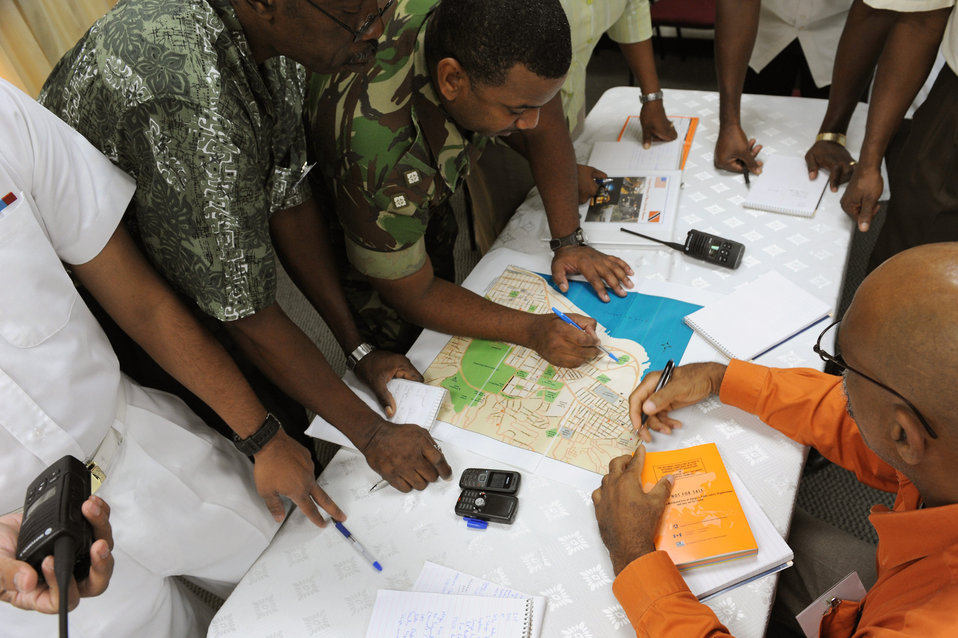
Trinidadian training concludes with counter-terrorism exercise

Local officials attend a disaster planning and mass casualty response class for primary care providers July 23, 2010, in Port of Spain, Trinidad and Tobago.